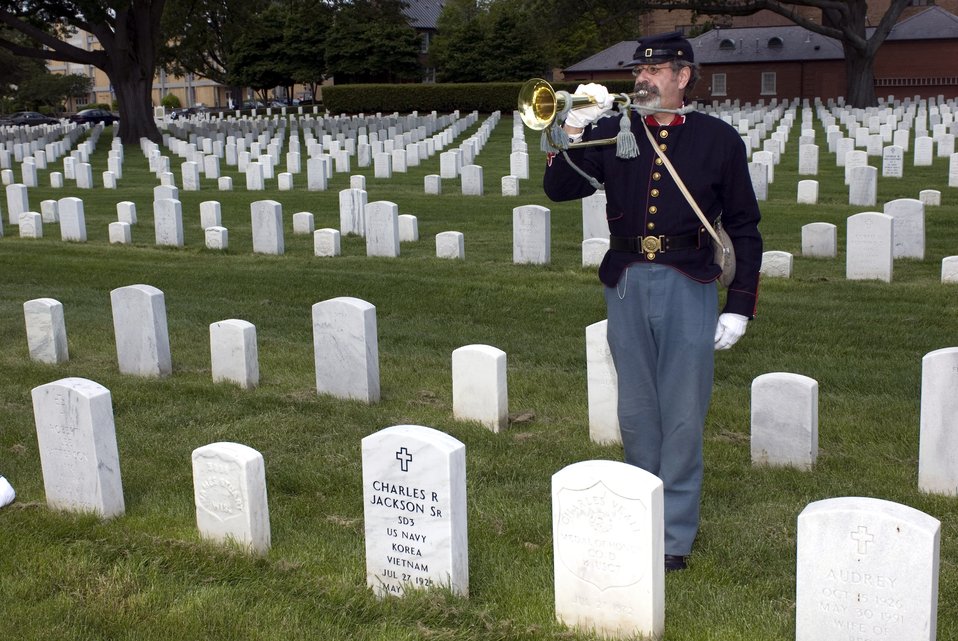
Kevin Ritton, a Civil War reenactment performer with the 79th New York Volunteer Infantry, plays